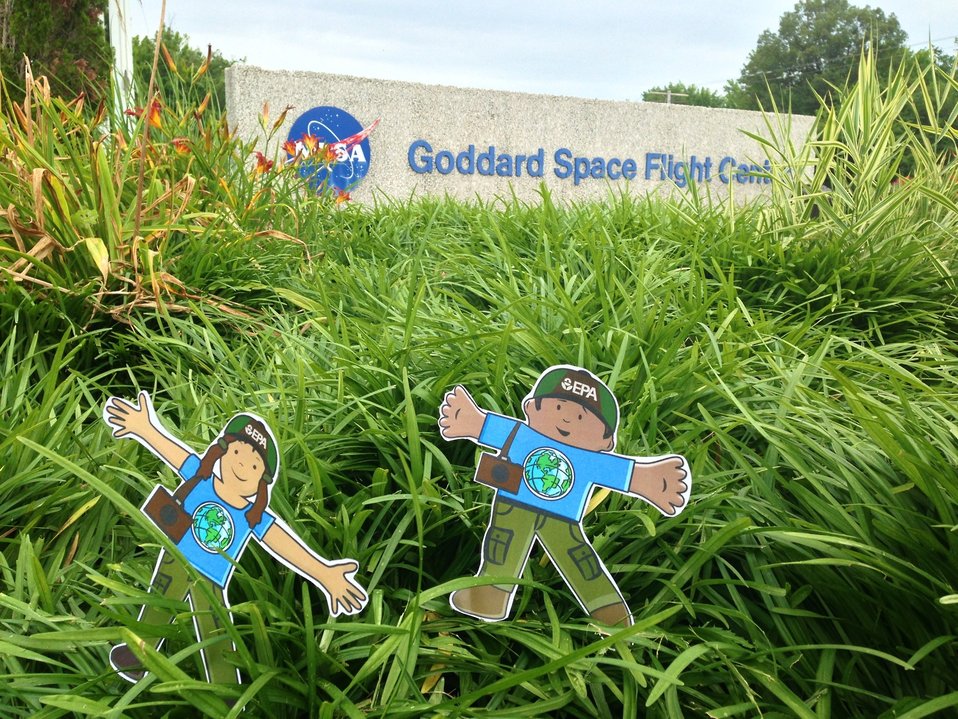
EPA's Stella and Stanley land at NASA's Goddard Space Center

Our Flat Stanley and Stella are off on their second adventure. Check out what they learn about the sun and share it with kids you know. Great resources available for teachers, parents, and caregivers are at the bottom of each story. blog.epa.gov/stanleyandstella Take a picture with your Stanley and Stella and share it at www.flatterworld.com